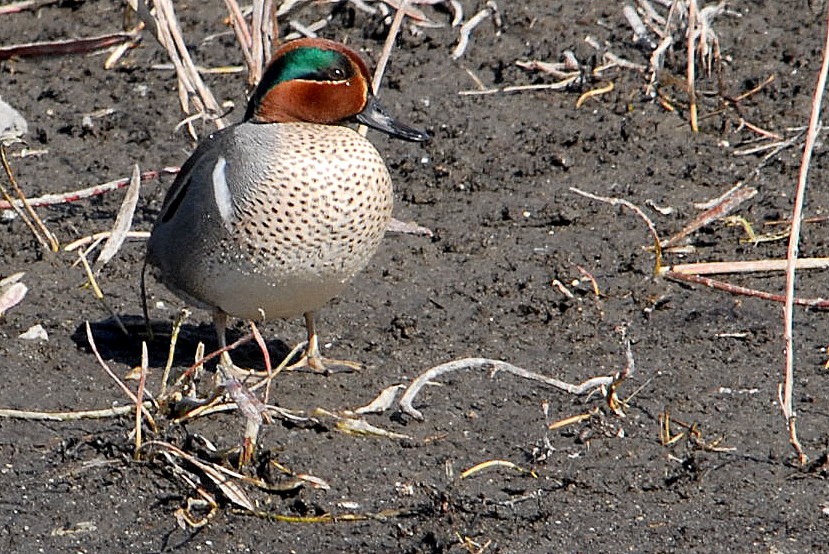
Green-winged Teal (male)